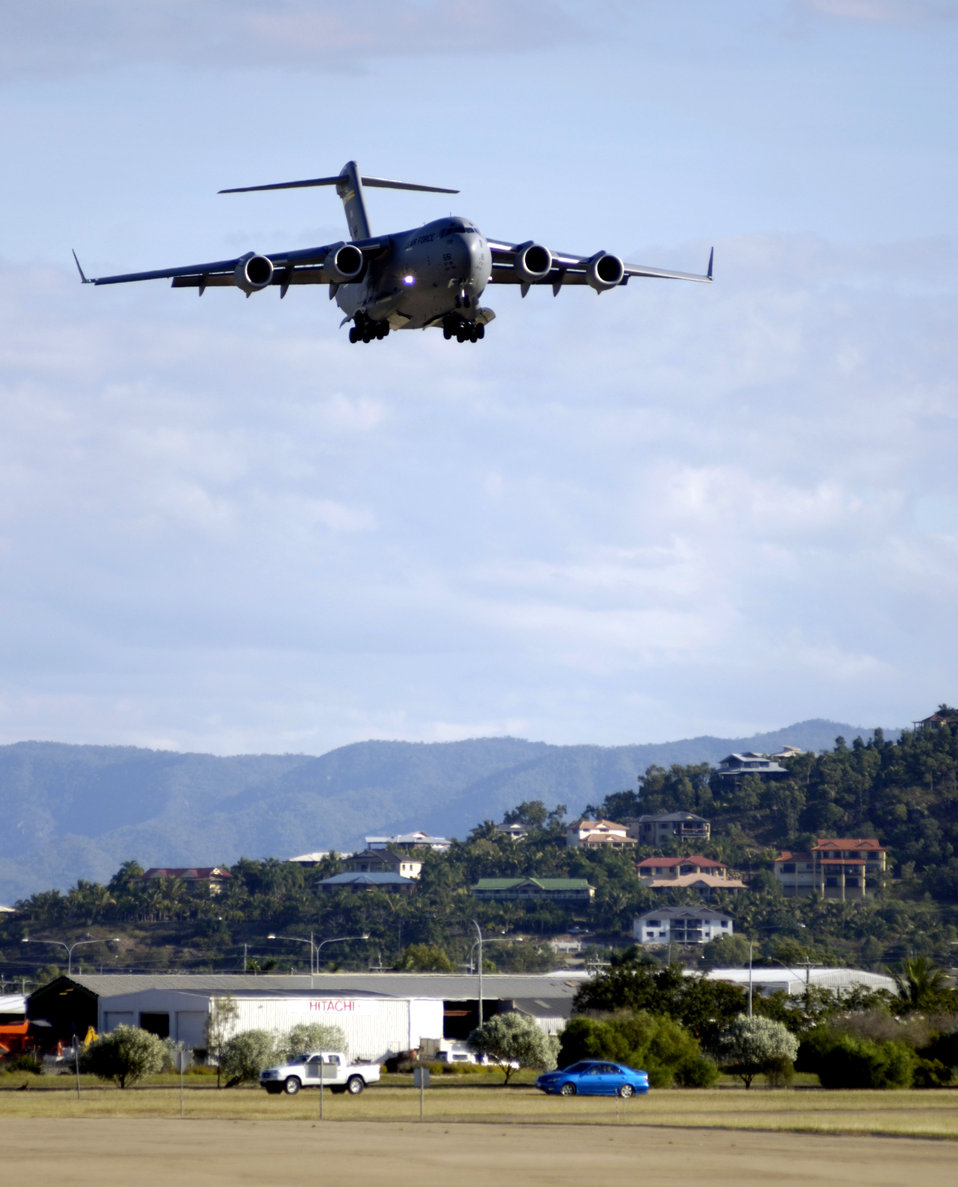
Combat Mobility Element moves cargo quickly, safely

A C-17 Globemaster III comes in for a landing at Royal Australian Air Force Base Townsville, Australia, on Tuesday, May 30, 2006. Two C-17s from the 15th Airlift Wing and the Hawaii Air National Guard's 154th Wing at Hickam Air Force Base, Hawaii, are helping the Australian Defense Force reposition its forces in Australia to better support peace operations in East Timor.